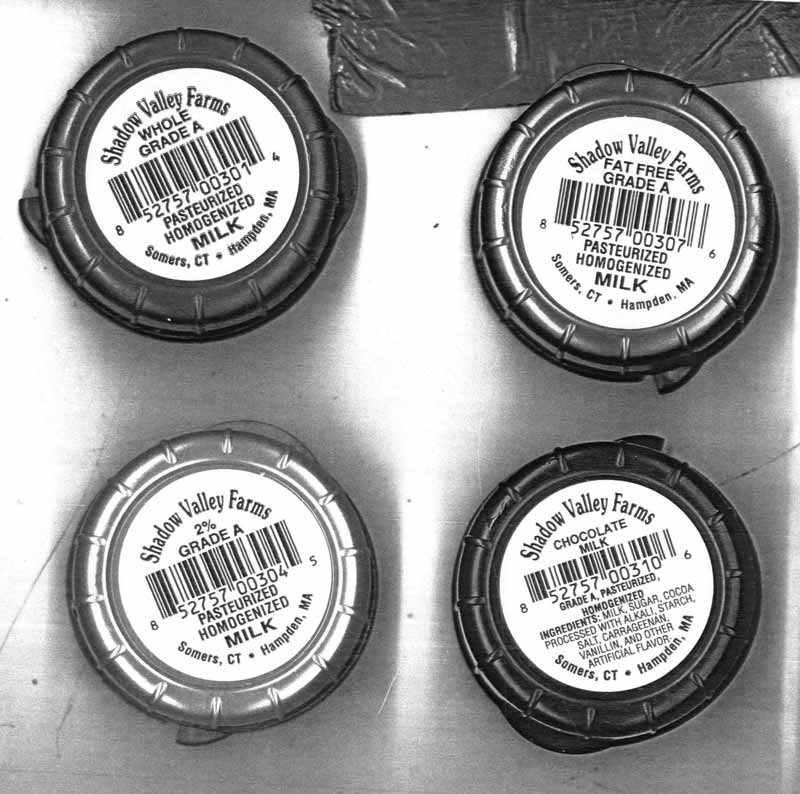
RECALLED – Milk and cream

June 12, 2014 – Fish Family Farm, Inc. Issues Allergy Alert On Milk Products And Cream Due To Potential Peanut And Tree Nut Contamination.